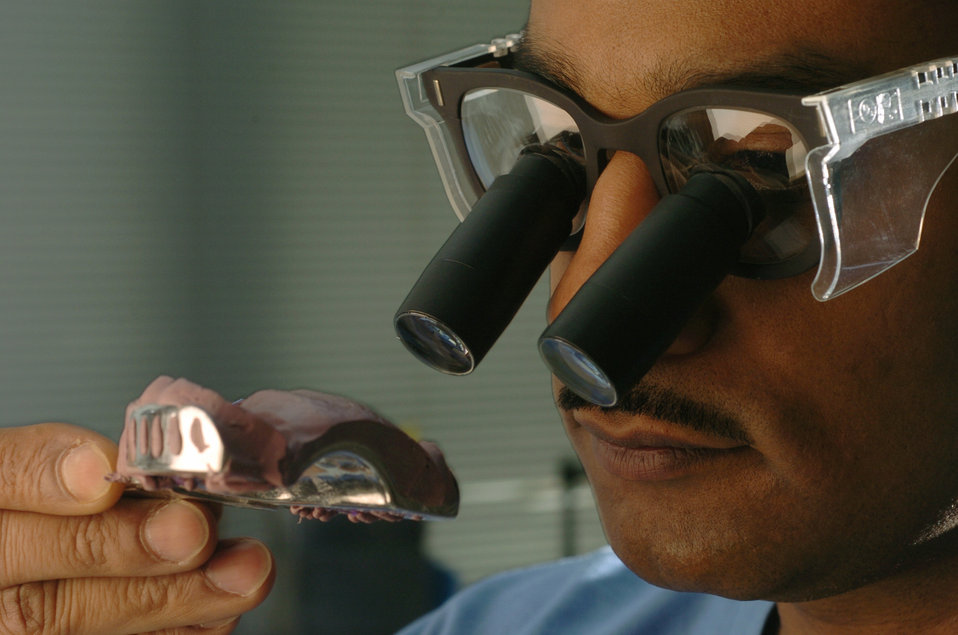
Dental lab techs keep Pacific forces smiling

YOKOTA AIR BASE, Japan -- Maj. Andre Henriques uses orascoptic glasses to examine an impression tray. He is a prosthodontist assigned to the 374th Dental Squadron here. The squadron's Airmen ensure maximum wartime readiness of Pacific Command people by providing comprehensive dental care for the active-duty servicemembers and other eligible beneficiaries.